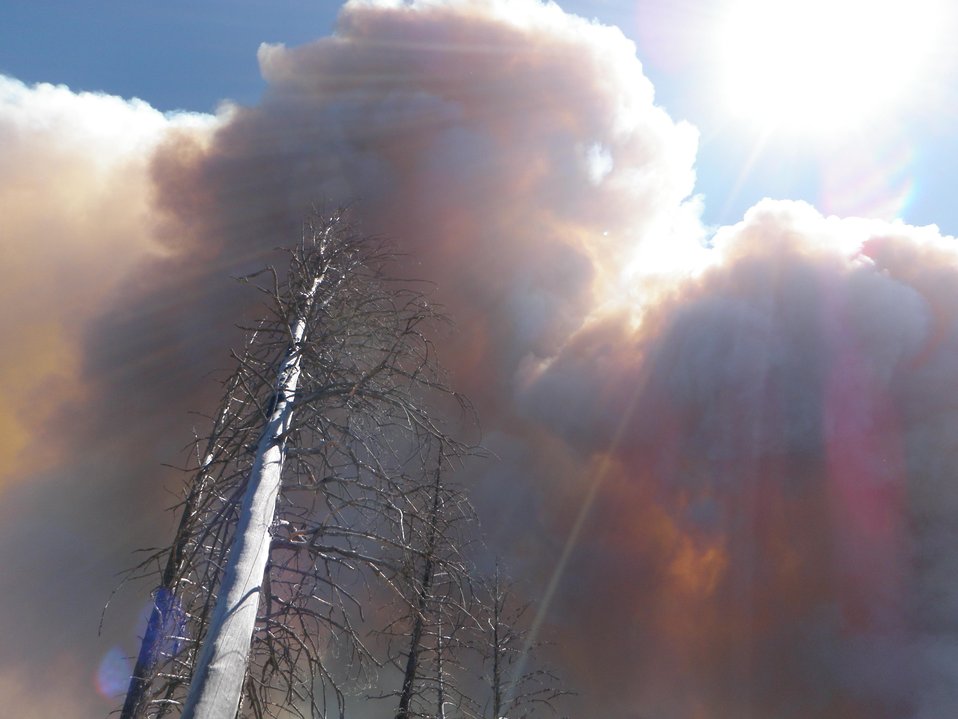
The Gold Pan Fire in the Bitterroot National Forest near Conner, MT began by lightning on Jul. 16, 2013 by lighting have consumed approximately 16,330 acres.